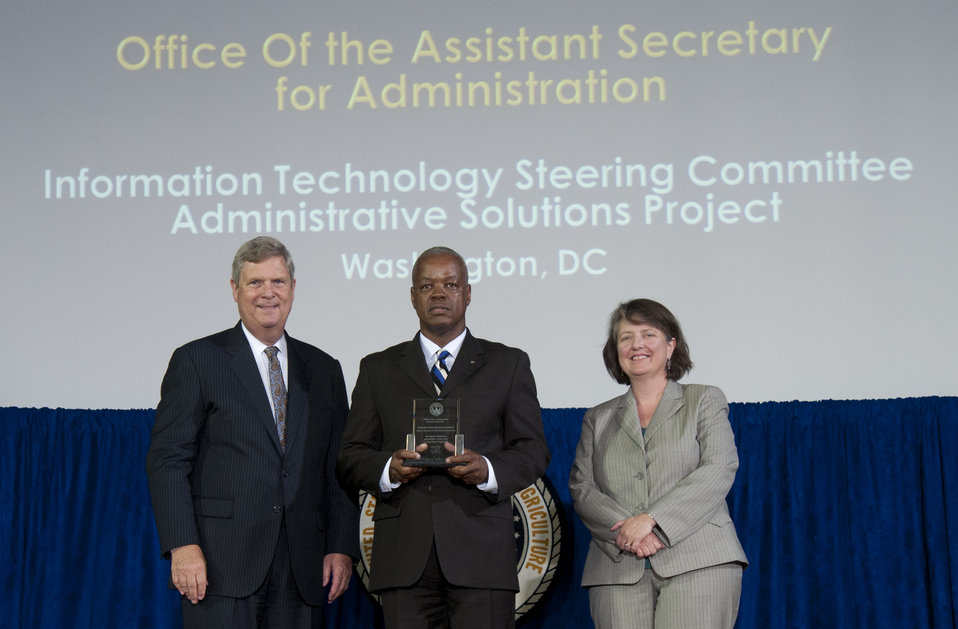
Agriculture Secretary Tom Vilsack and Agriculture Deputy Secretary Kathleen Merrigan present the Secretary’s Honor Award to Information Technology Steering Committee Administrative Solutions Project, Office of the Assistant Secretary for Administration group leader Charles McClam at the U.S. Department of Agriculture (USDA) 64th Annual Honor Awards Ceremony in Washington, D.C. on Wednesday, Sept. 12, 2012. The Information Technology Steering Committee achieved the first major information technology milestone in the Strengthening Service - Administrative Solutions Project.